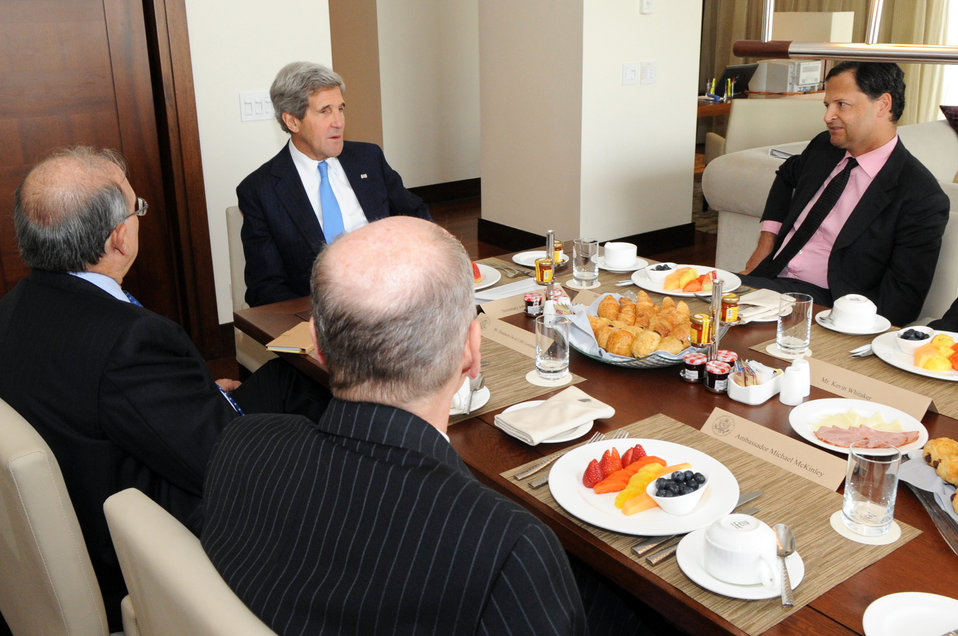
Secretary Kerry Holds a Breakfast Meeting With Colombian Peace Negotiators

U.S. Secretary of State John Kerry, accompanied by U.S. Ambassador to Colombia Michael McKinley, lower center, holds a breakfast meeting with Colombian peace negotiators Humberto De la Calle Lombana, left, and Sergio Jaramillo Caro, right, in Bogota, Colombia, on August 12, 2013.